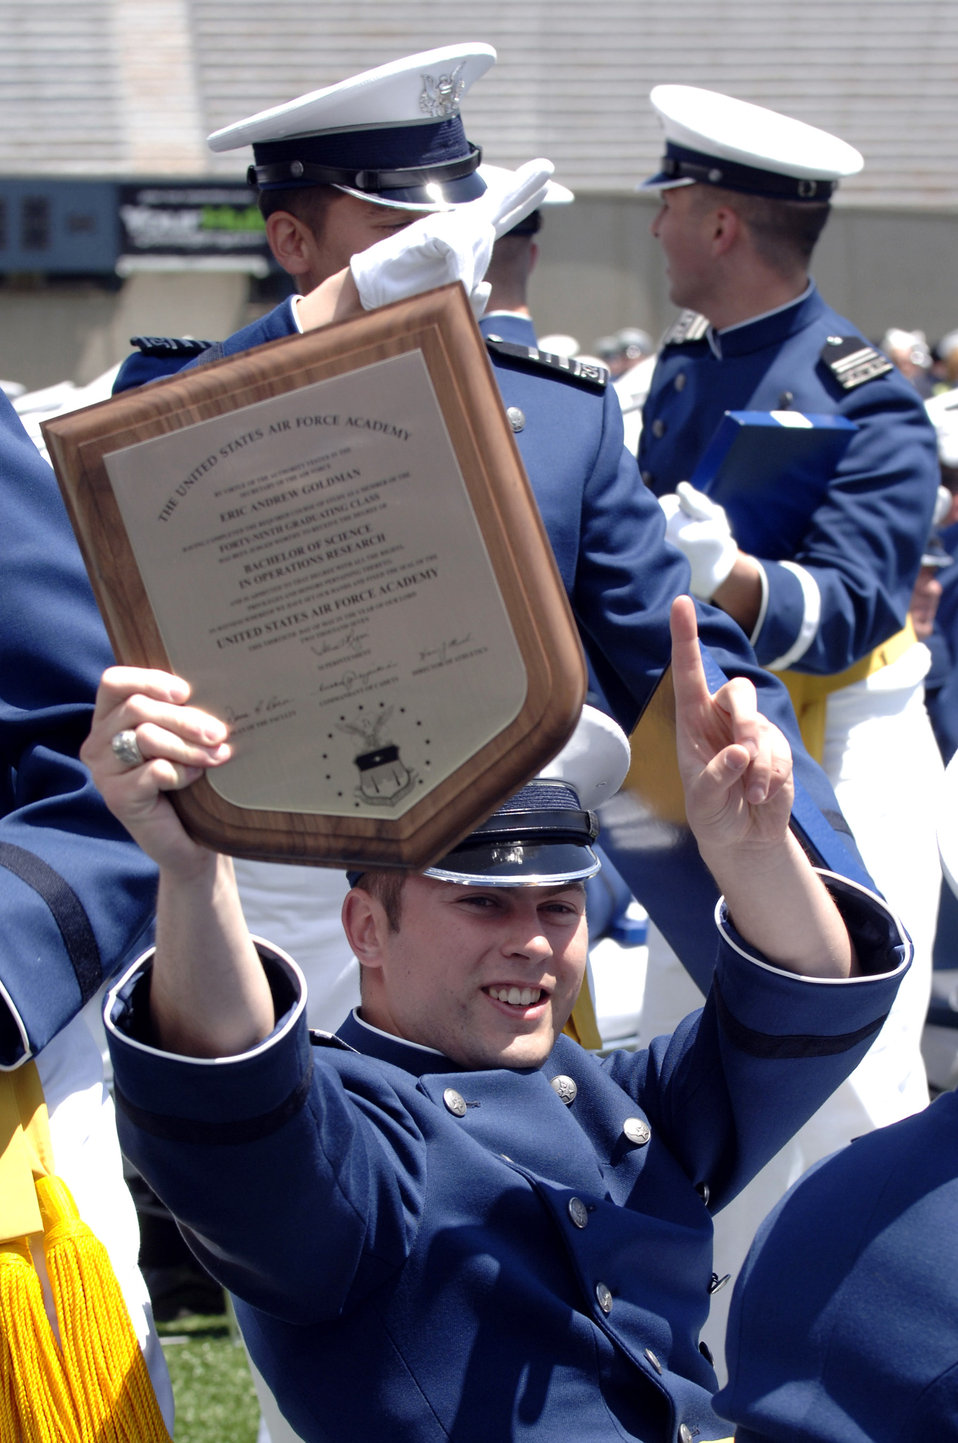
'Stay true' SECDEF tells Air Force Academy grads

Newly minted 2nd Lt. Eric Goldman holds up his diploma for his friends and family to see during the 2007 U.S. Air Force Academy graduation ceremony May 30 in Colorado Springs, Colo.